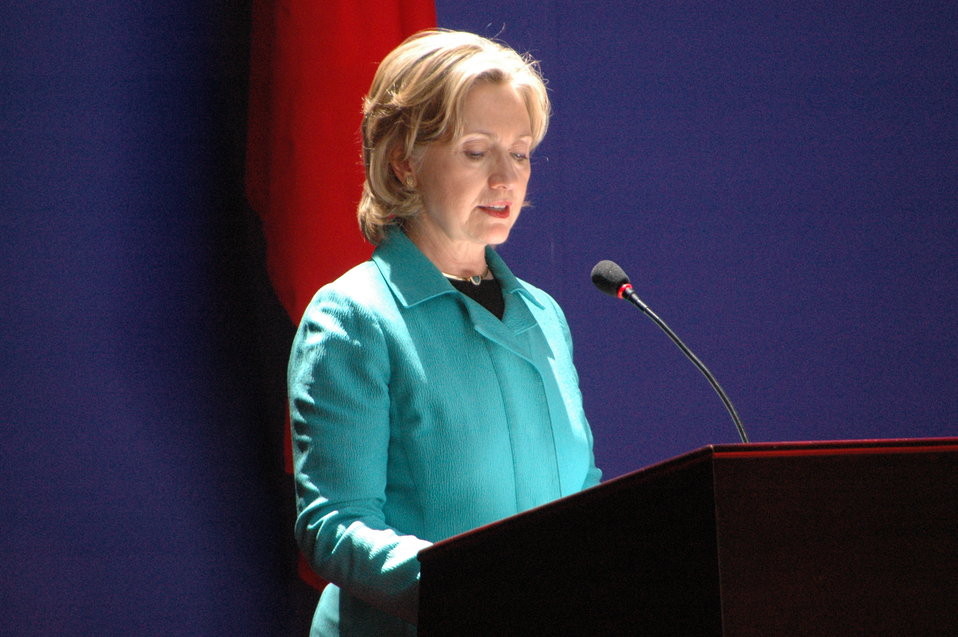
Secretary Clinton Delivers Remarks at the People-to-People Exchange Ceremony

U.S. Secretary of State Hillary Rodham Clinton delivers remarks at the U.S.-China Consultation on People-to-People Exchange ceremony at the National Center for the Performing Arts in Beijing, China, May 25, 2010.